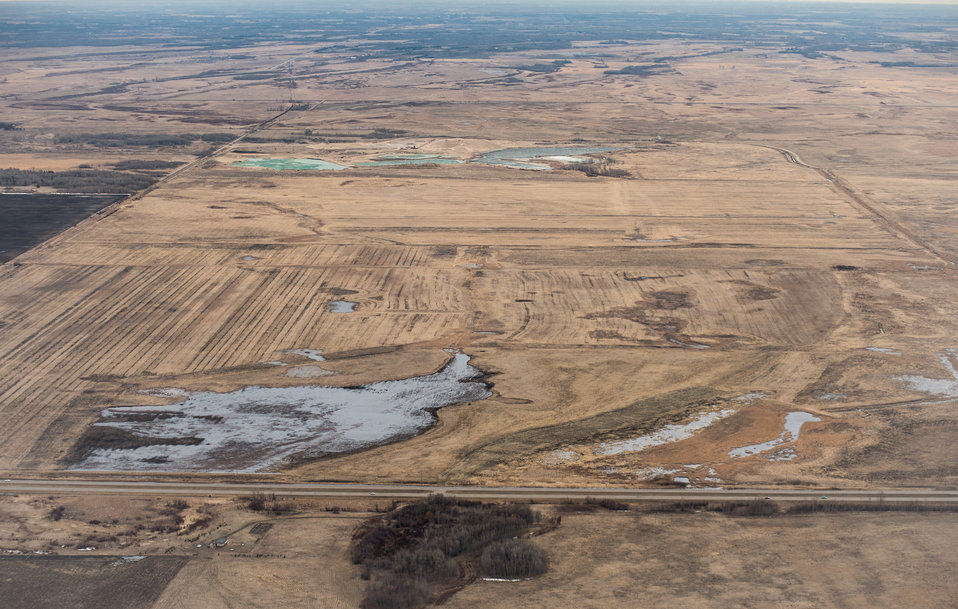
Southward view of Glacial Ridge National Wildlife Refuge with U.S. Department of Agriculture (USDA), Natural Resources Conservation Service (NRCS), Wetland Reserve Program and Public Law PL83-566 Small Watershed Program participants' land in Polk County, MN, on Tuesday, April 30, 2013. US Highway 2 runs across the lower portion of the view.